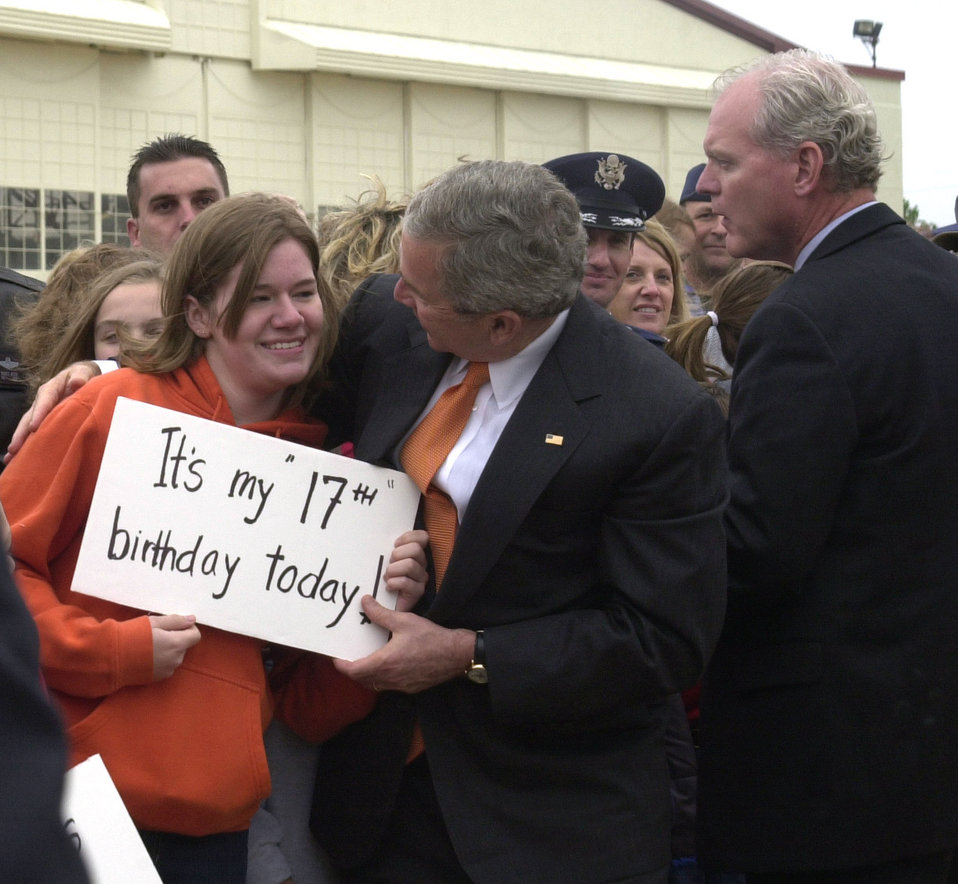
Commander in chief visits Vance AFB

President George W. Bush congratulates Becky Kriner on her 17th birthday at Vance Air Force Base, Okla., on Saturday, May 6, 2006. Becky is the daughter of Col. Kevin Kriner, 71st Operations Group commander, and his wife, Mary. The president stopped at Vance on his way to Oklahoma State University in Stillwater to give the commencement address.